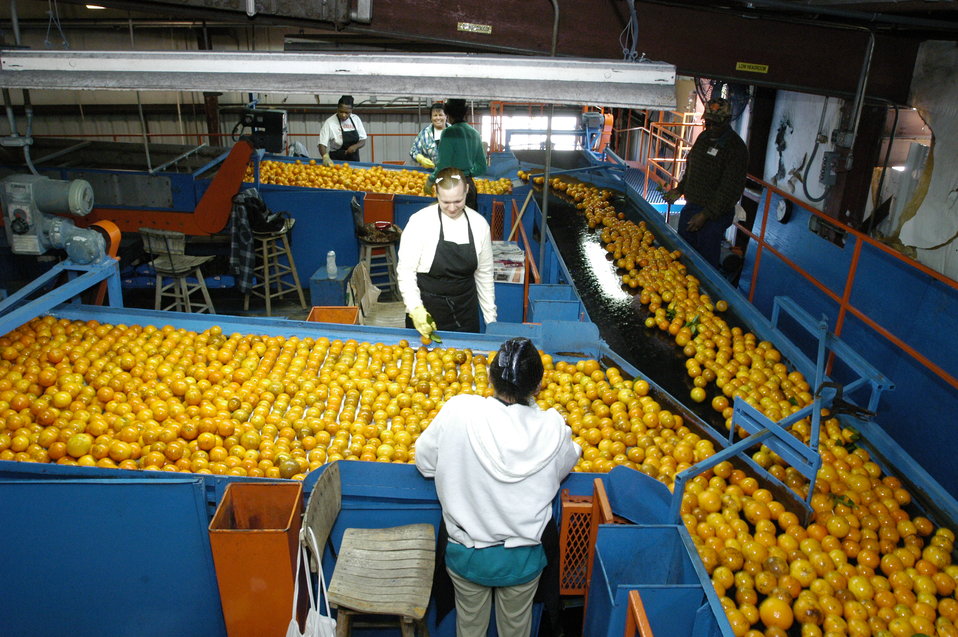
Oranges are processed at the Seald Sweet processing plant in Vero Beach, Florida on February 10, 2006. A trailer load of oranges is weighed on scales in order to determine the weight of fruit received, which will be used to base the payment to the grower. The oranges are unloaded onto a conveyor belt and from this belt the Florida Department of Agriculture and Consumer Services (FDACS) takes a representative sample to test it for juice content, maturity, and to certify the pounds solids per box (the unit that growers' payment is based upon). The fruit is then diverted to storage bins labeled according to the juice specification as determined by FDACS. The fruit is conveyed by belt through a washing process and enters the processing plant where it is graded for bad or damaged fruit. The fruit is then separated by size and sent to the juice extractors. Before juicing, the peel is pricked to extract the oils found in the peel and then the juice is extracted.